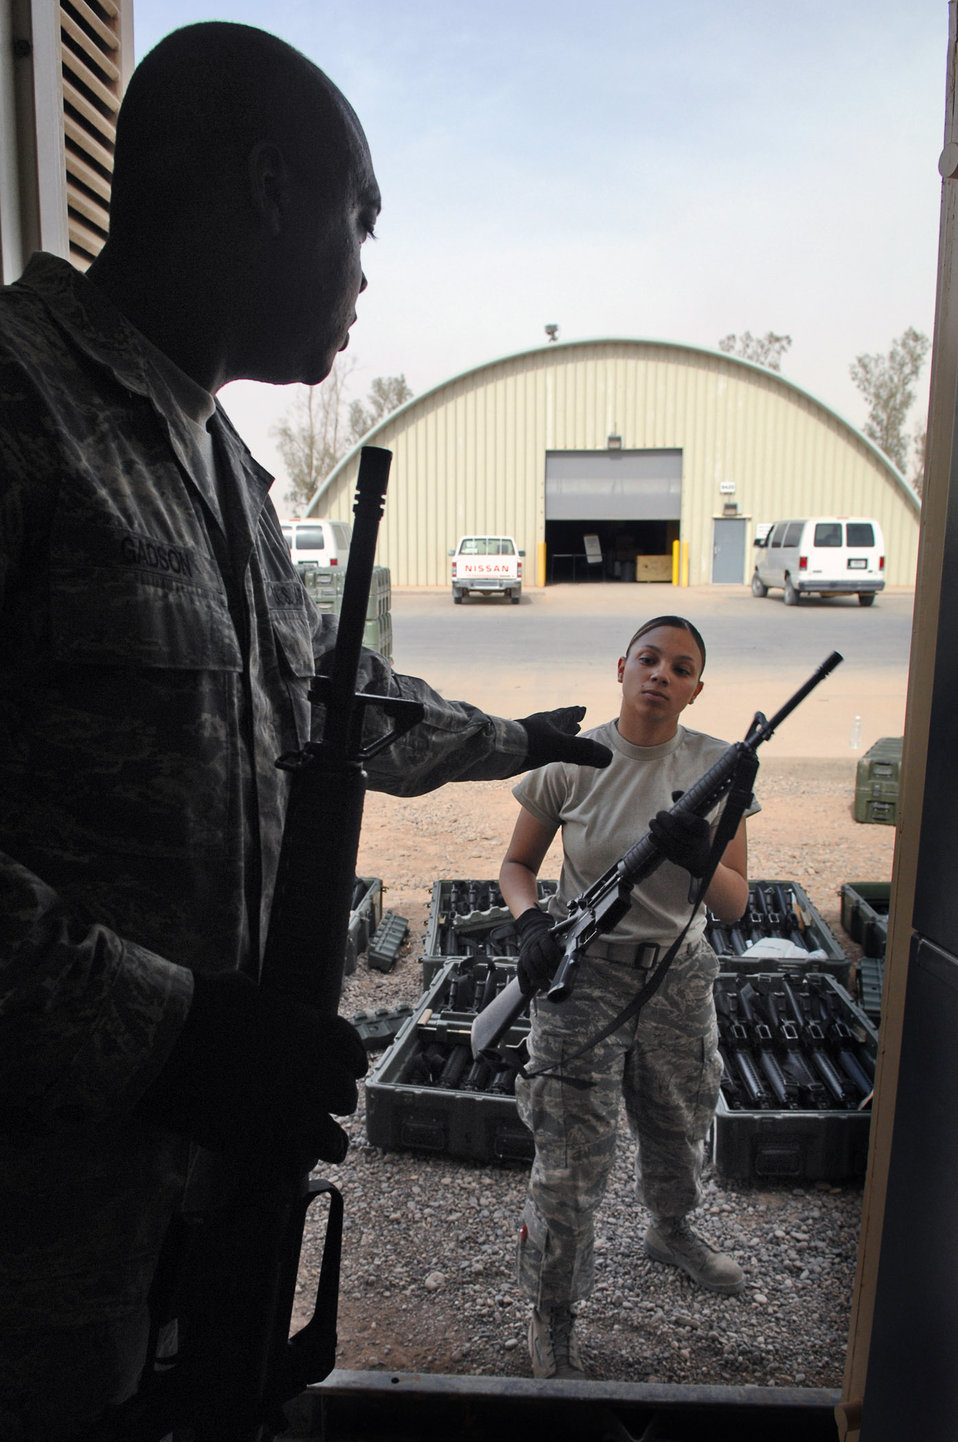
Prepositioning weapons at Balad to save $1.3 million

Airman 1st Class Lianette Williams hands an M-16 rifle to Tech. Sgt. Eric Michel April 5 at Balad Air Base, Iraq. Airman Williams is a 332nd Expeditionary Logistics Readiness Squadron base supply manager deployed from Luke Air Force Base, Ariz. Sergeant Michel is the 332nd ELRS base supply manager deployed from Ellsworth AFB, S.D.